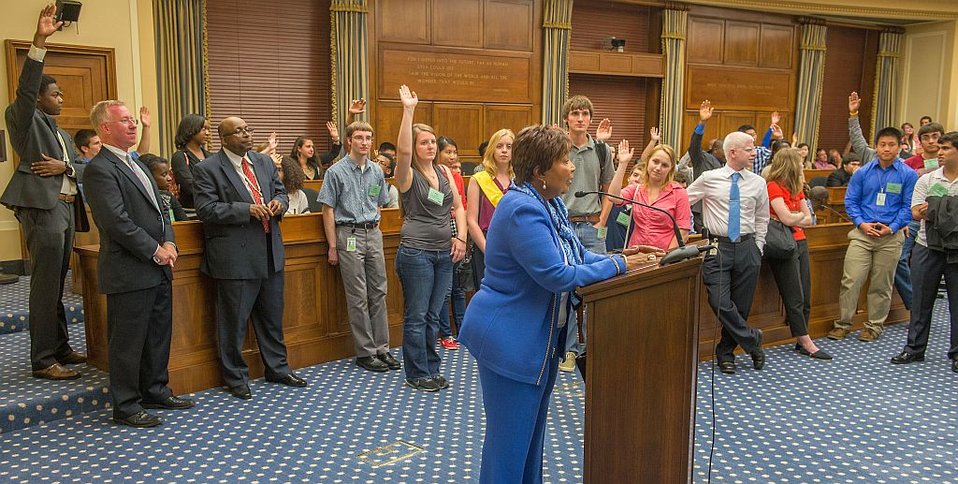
Congresswoman Eddie Bernice Johnson and SURF students

Congresswoman Eddie Bernice Johnson, Dem. Texas, (center) asks a question of NIST Student Undergraduate Research Fellows, as NIST Legislative Director Jim Schufreider (far left) and NIST Deputy Director Willie May (left) listen in the House Science Committee Meeting Room.